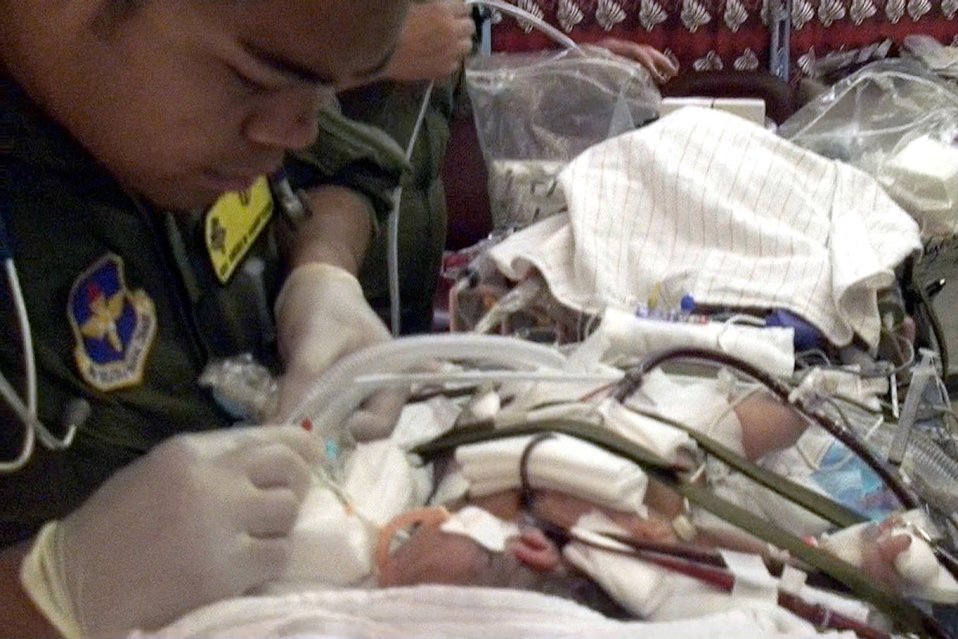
WHMC ECMO team

Airman 1st Class Andrew Pamintuan suctions the infant's endotracheal tube on the Wilford Hall Medical Center's extra corporeal membrane oxygenation transport cart in the neonatal intensive care unit at the Kapiolani Medical Center in Honolulu July 22. The ECMO team was needed to transport the critically ill infant to California for advanced medical treatment. Airman Pamintuan is a neonatal intensive care unit respiratory therapist assigned to the 59th Medical Operations Squadron.